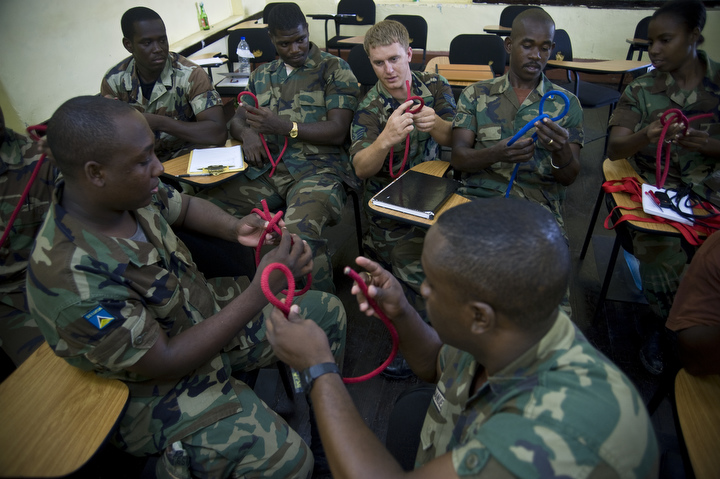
St. Lucia police team with Airmen during Operation Southern Partner

Senior Airman Blair Baerny teaches knot tying to the Royal St. Lucia police force's special service unit during a subject matter expert exchange June 1 at La Toc, St. Lucia. Senior Airman Baerny is a pararescueman and member of a Guardian Angel team deployed to Operation Southern Partner. He is assigned to the 58th Rescue Squadron from Nellis Air Force Base, Nev.